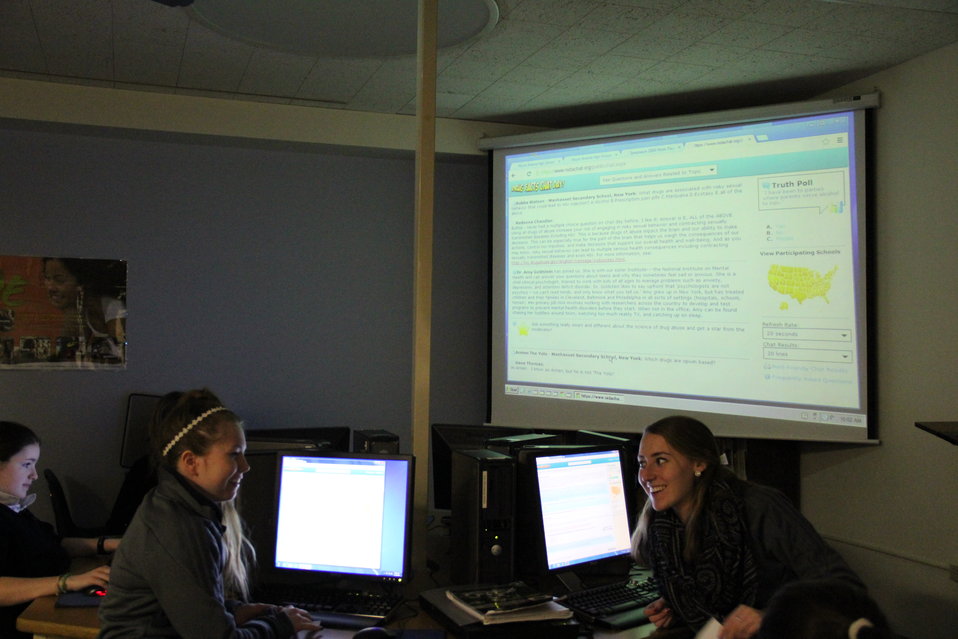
Getting the Facts on Drugs

Teens at Mount Alvernia High School in Newton, Mass. take the NIDA's IQ Challenge during NDFW's CHAT DAY 2014